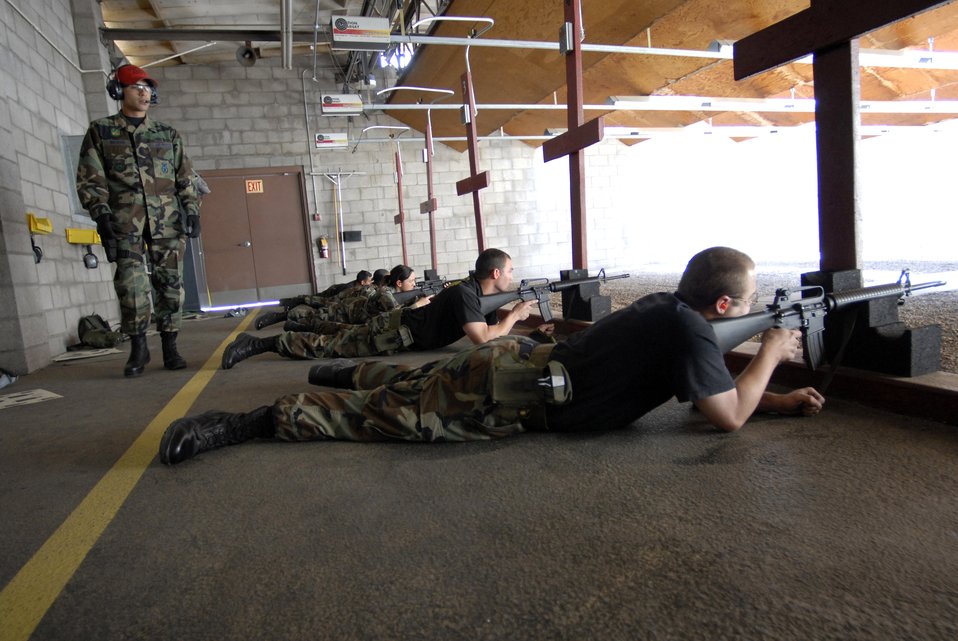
The line is ready, FIRE!

Staff Sgt. Matthew Buchan moniters the Airmen on the firing line for safety infractions and weapon malfunctions April 12 at Luke Air Force Base, Ariz. Sergeant Buchan is a combat arms instructor for the 56th Security Forces Squadron. Airmen must be qualified in their primary weapon prior to deploying in support of the war on terrorism. There are more than 28,000 Airmen deployed around the world today.